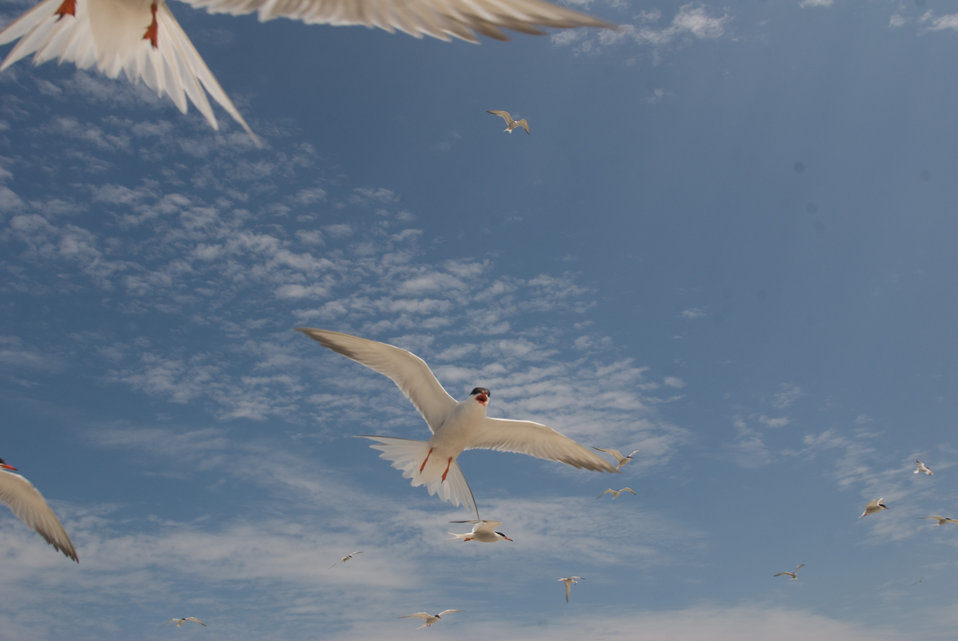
Terns at Monomoy National Wildlife Refuge

Terns in flight at Monomoy National Wildlife Refuge in Massachusetts.